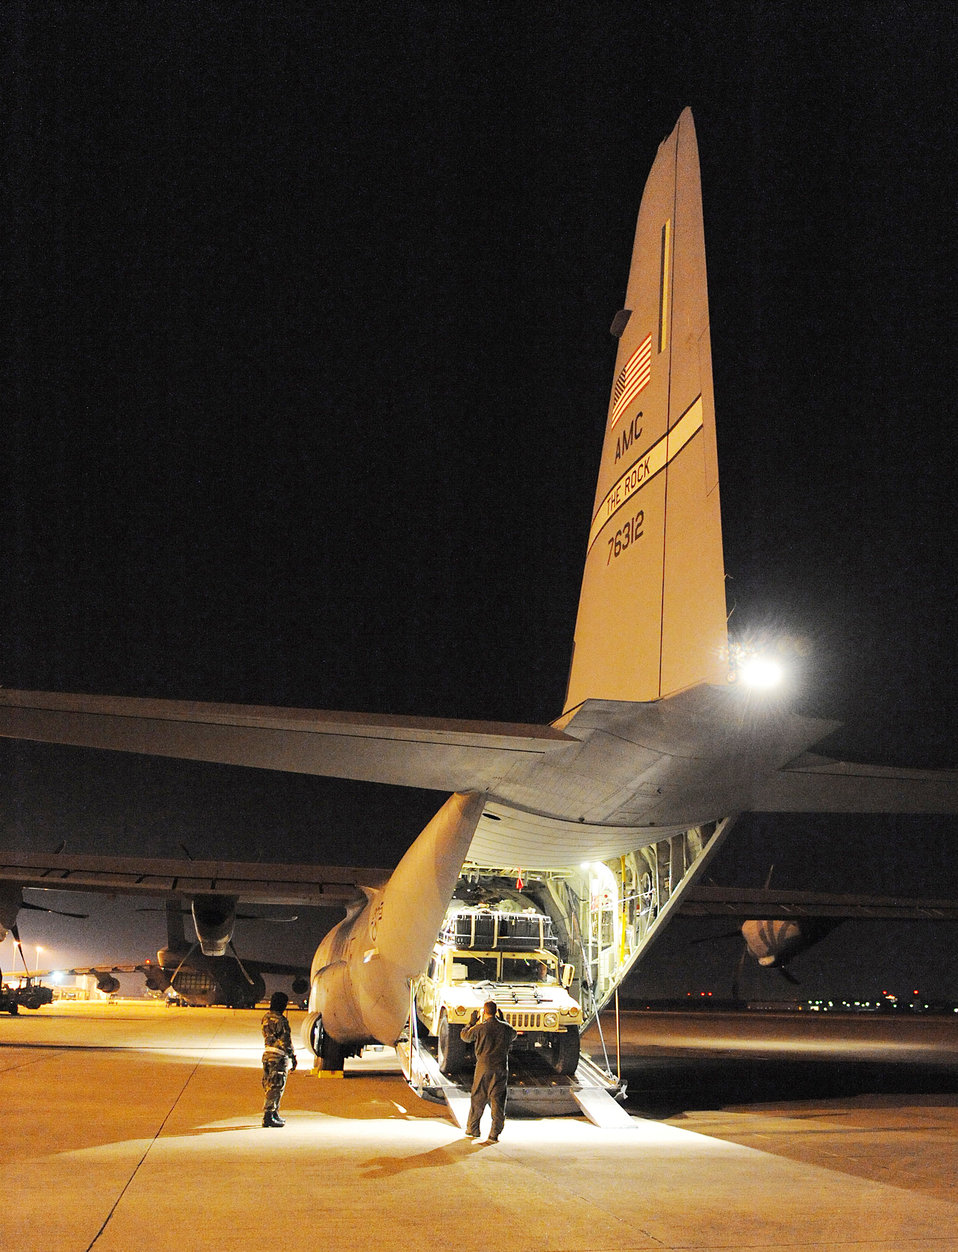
Little Rock AFB crew gets supplies on ground

Staff Sgt. Lynzey Thorton, 41st Airlift Squadron loadmaster, guides a Humvee into the back of a C-130J Super Hercules Jan. 14, 2010, at the Biloxi-Gulfport International Airport, Miss., as part of their humanitarian mission to Haiti.